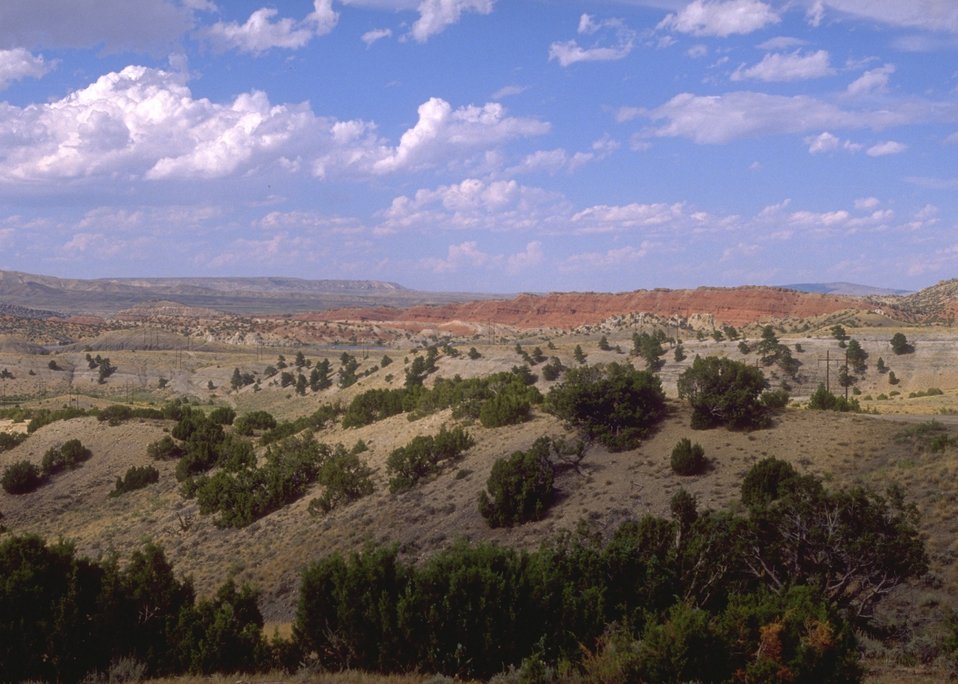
Landscape along the Alcova/Seminoe Back Country Byway south of Alcova, Rawlins Field Office.